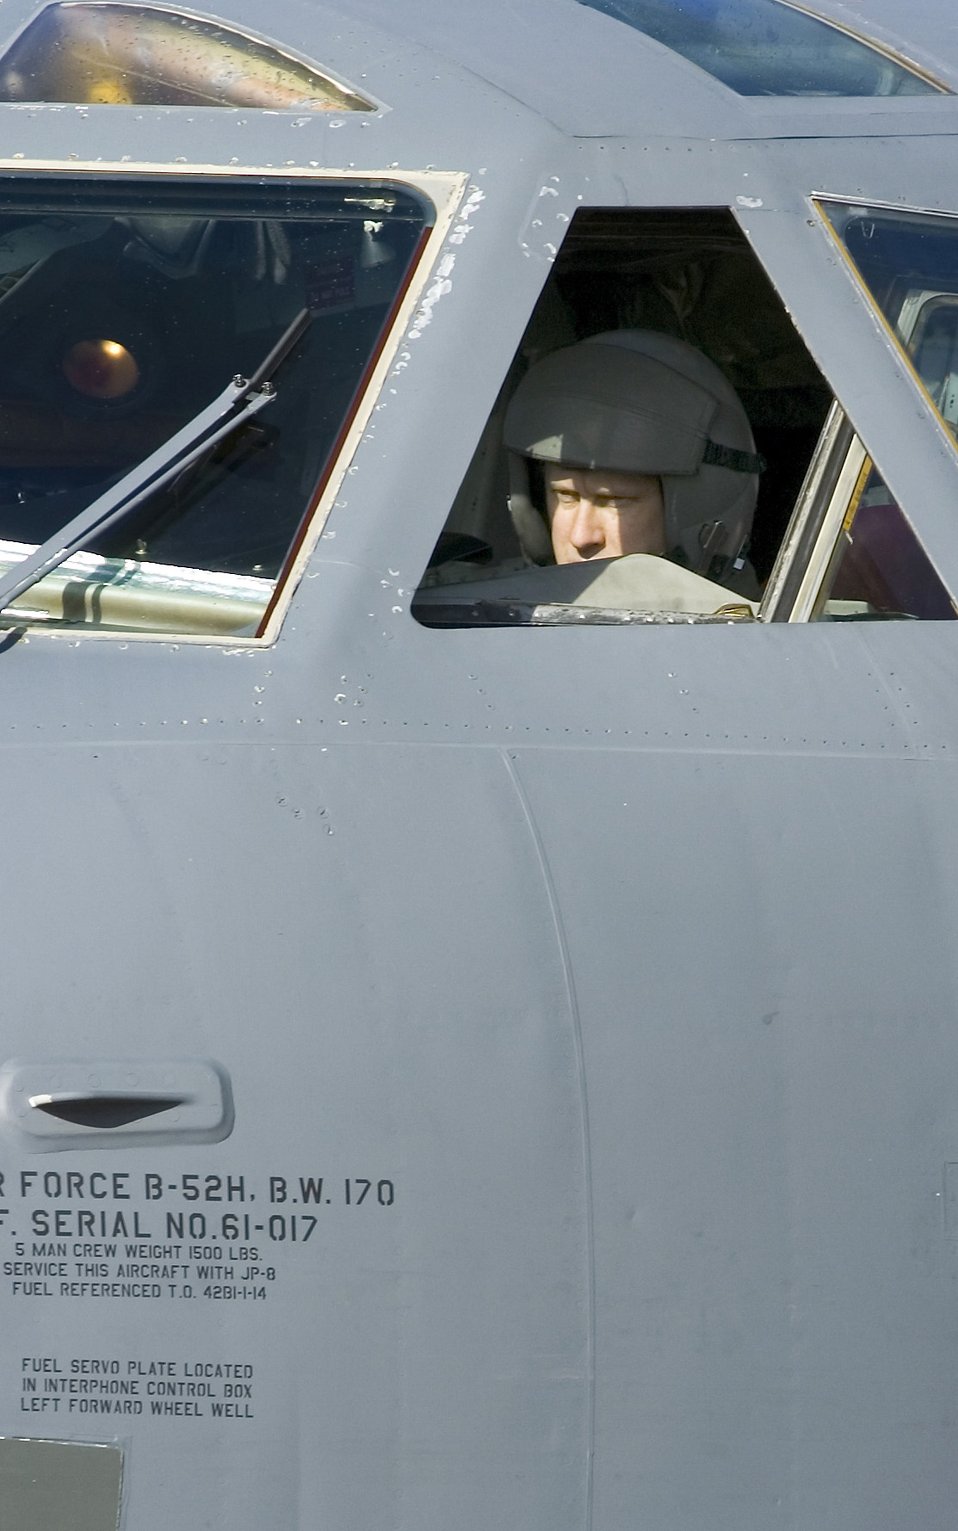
Stratofortress mission

BARKSDALE AIR FORCE BASE, La. (AFPN) -- Maj. Rob Burgess, 93rd Bomb Squadron, prepares a B-52H Stratofortress for takeoff here Feb. 4.